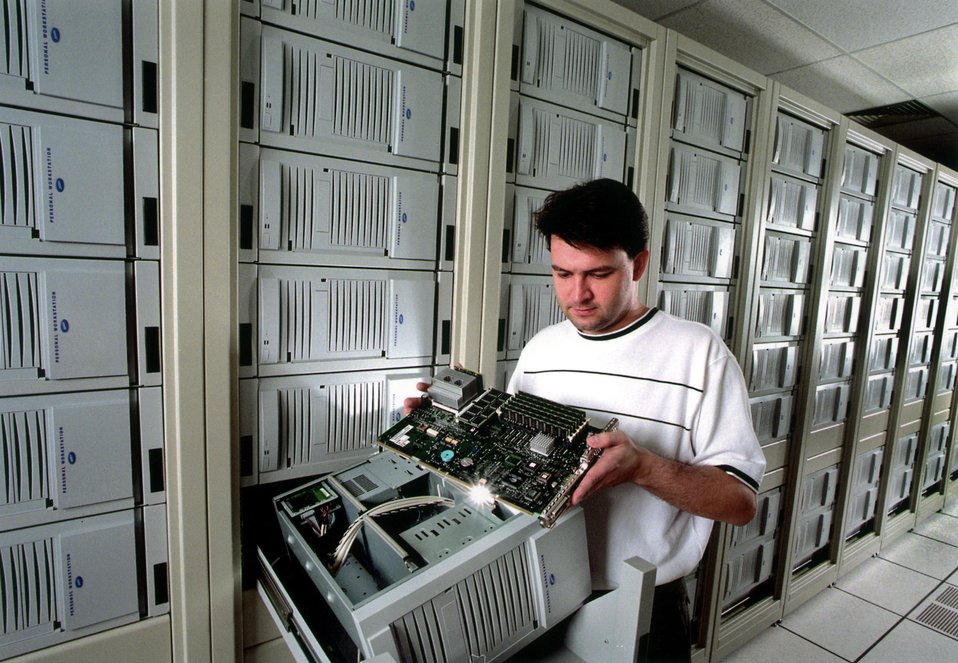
SANDIA TECHNICIAN EXAMINES MOTHERBOARD OF ONE OF C PLANT'S COMPUTERS.

THE CPLANT ANTARCTICA COMPUTER AT SANDIA, AFTER INTEGRATING 1300 OFF-THE-SHELF COMPUTERS, IS RATED AS ONE OF THE FASTEST IN THE WORLD. THE CPLANT CONTAINS 1600 COMPAQ COMPUTER CORP. ALPHA COMPUTERS, ALSO CALLED NODES.